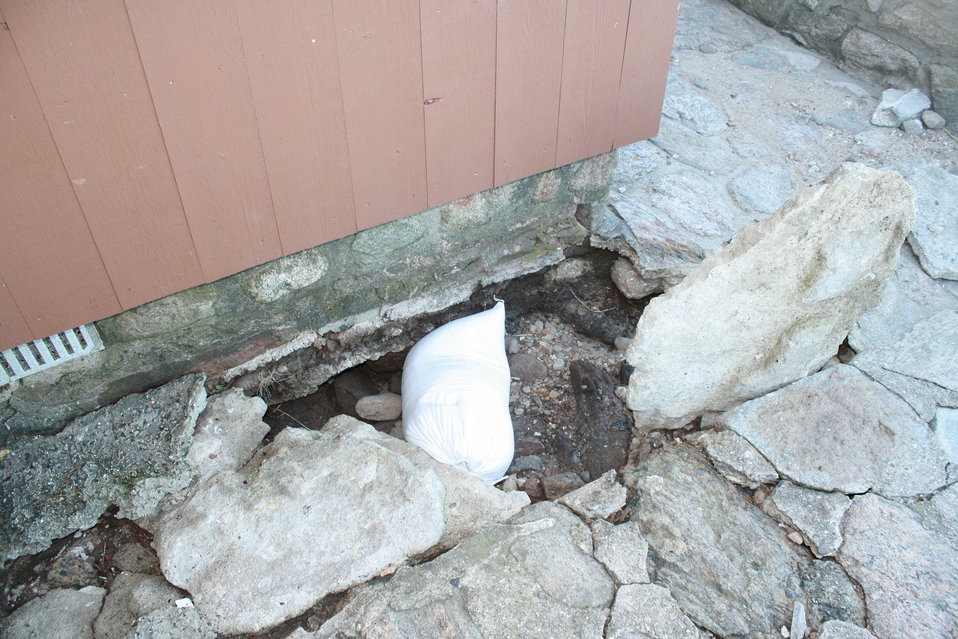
Damage at Stewart B. McKinney National Wildlife Refuge (CT)

After Hurricane Sandy, pieces of foundation and ground were disturbed on the refuge's Outer Island.